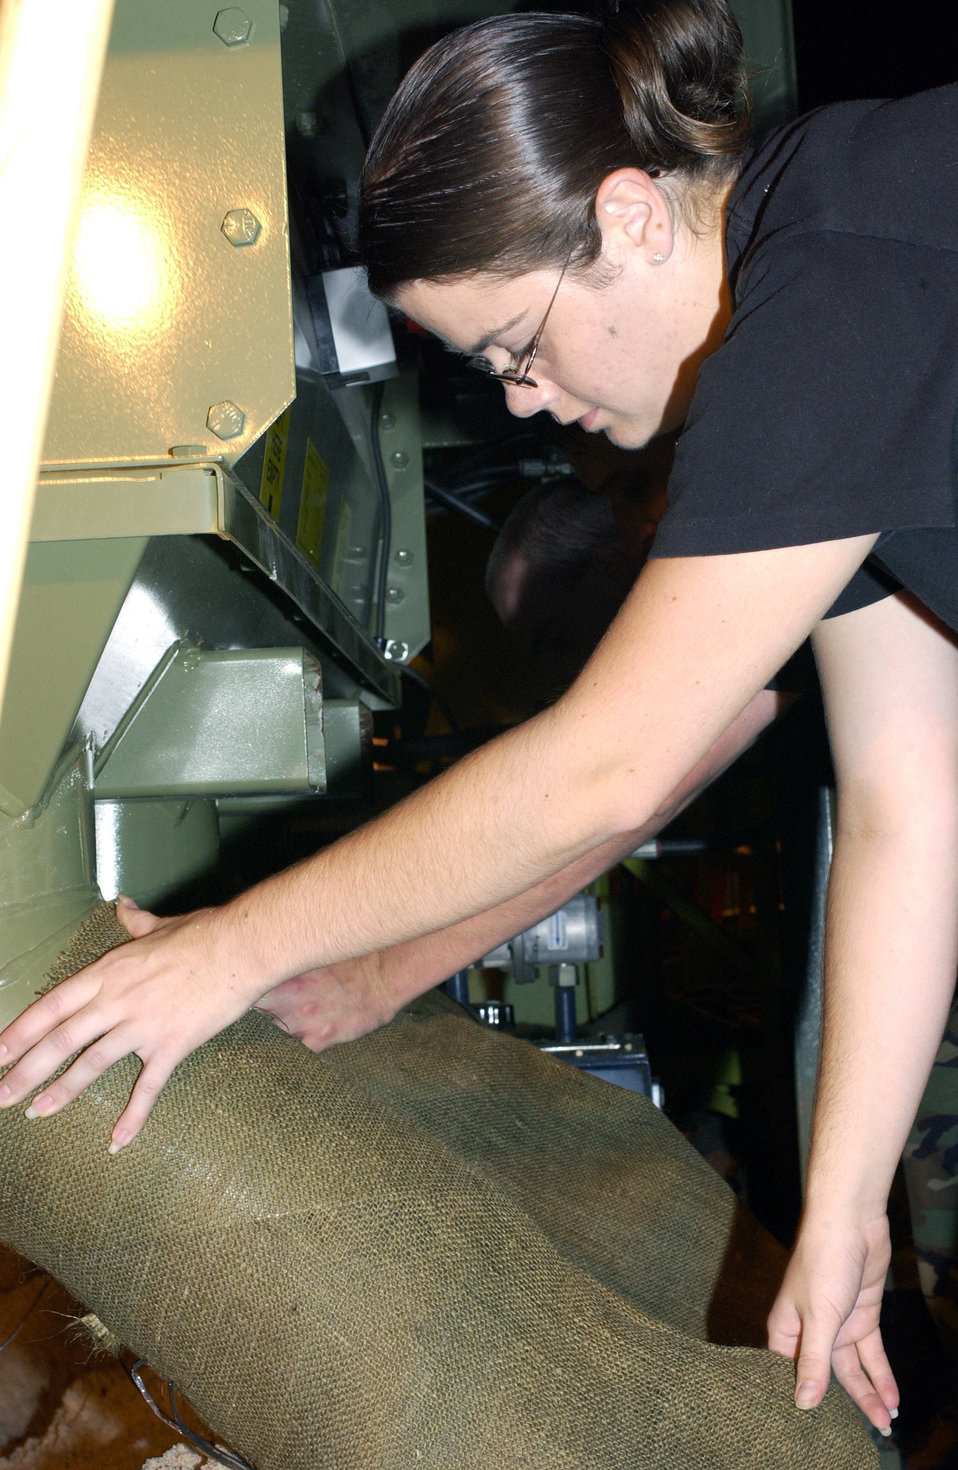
Hurricane Charley preparation

LANGLEY AIR FORCE BASE, Va. - An Airman fills sand bags in preparation for Hurricane Charley here Aug. 13. The base is taking precautionary measures to ensure limited damage in the event that Hurricane Charley makes landfall in Virginia.